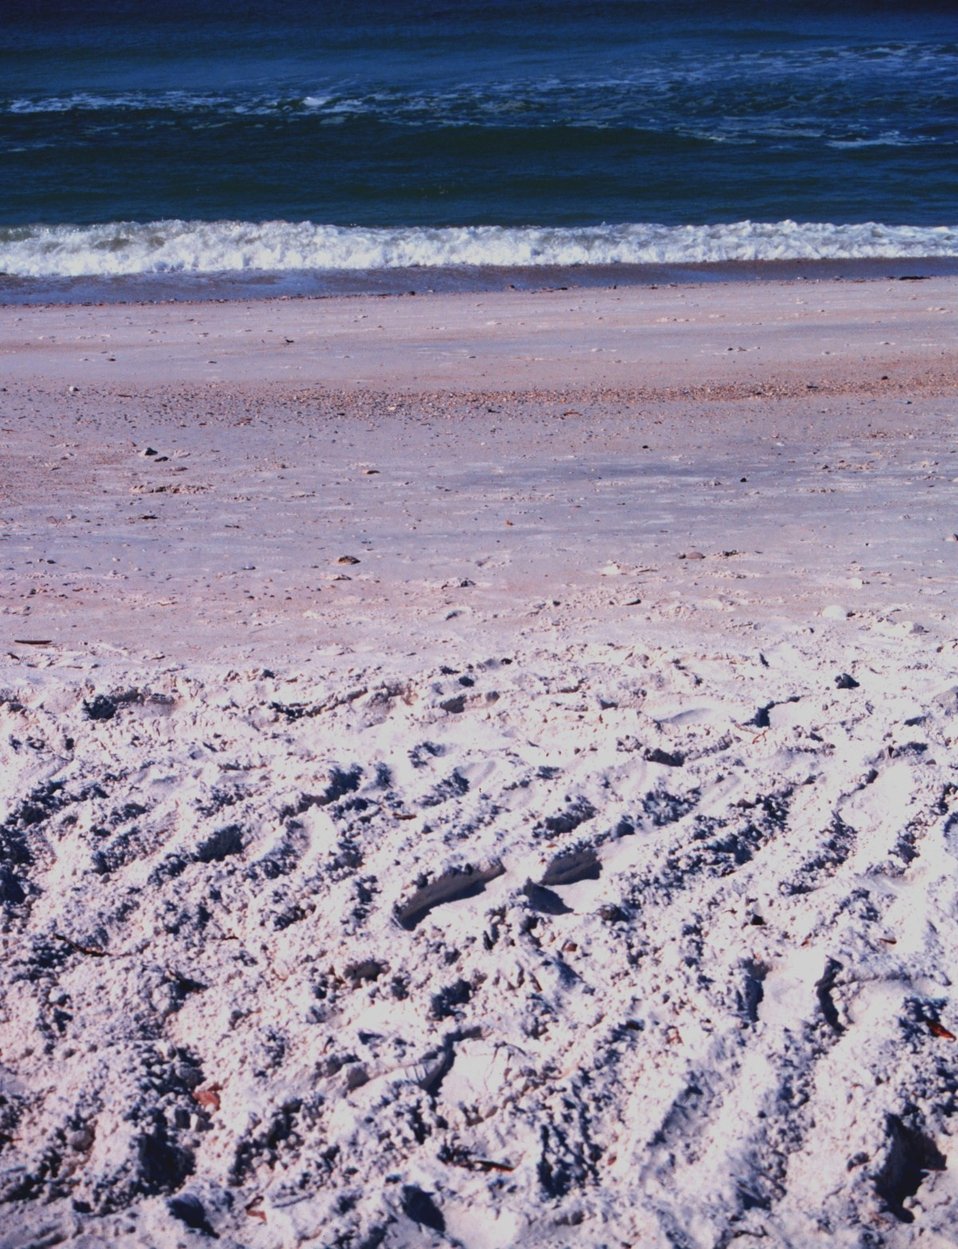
A view of the beach along the Gulf of Mexico